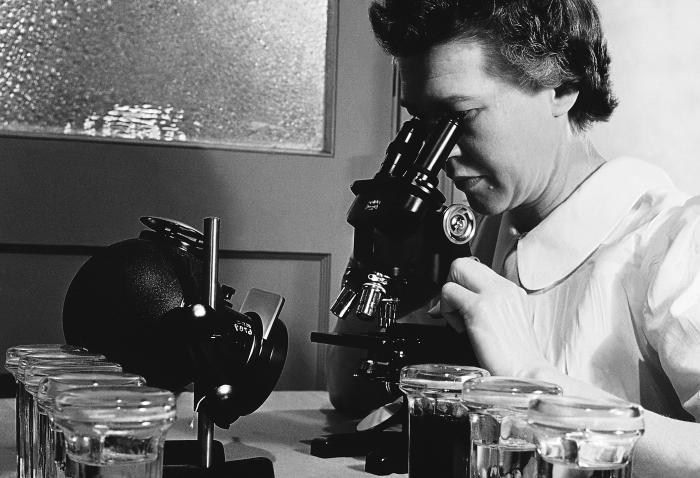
This is a 1954 still-shot from the CDC produced film "The Diagnosis of Intestinal Protozoa by Means of Hematoxylin-Stained Smears", and showed laboratorian Sadie Johnson Geiger looking into a microscope during her investigation.